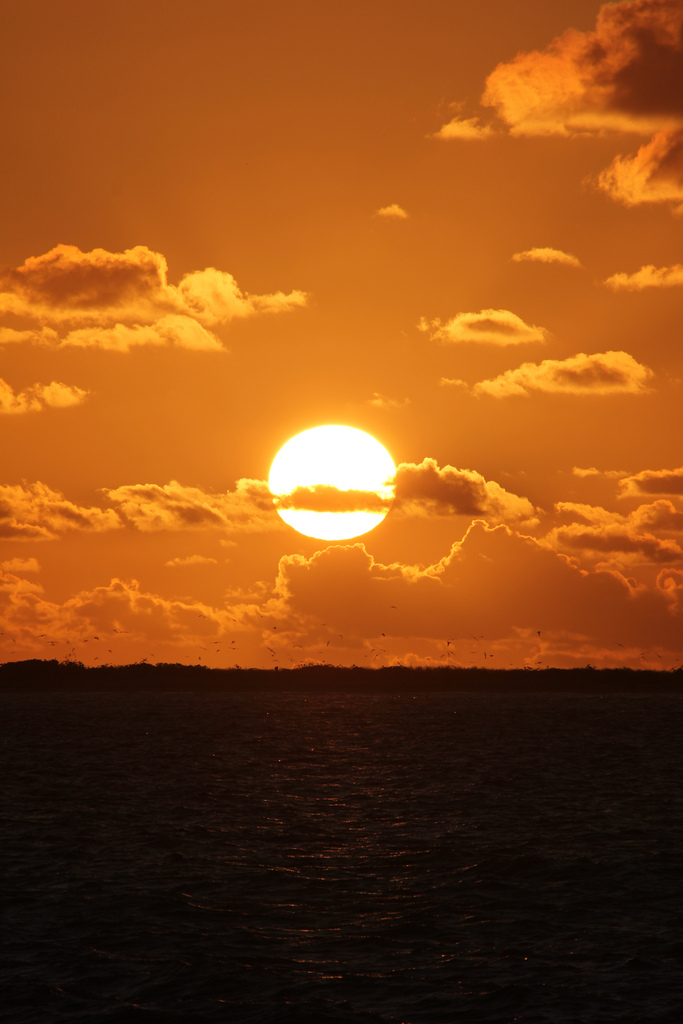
sunrise over Eastern Island

Midway Atoll National Wildlife Refuge,
Papahānaumokuākea Marine National Monument
January 2012